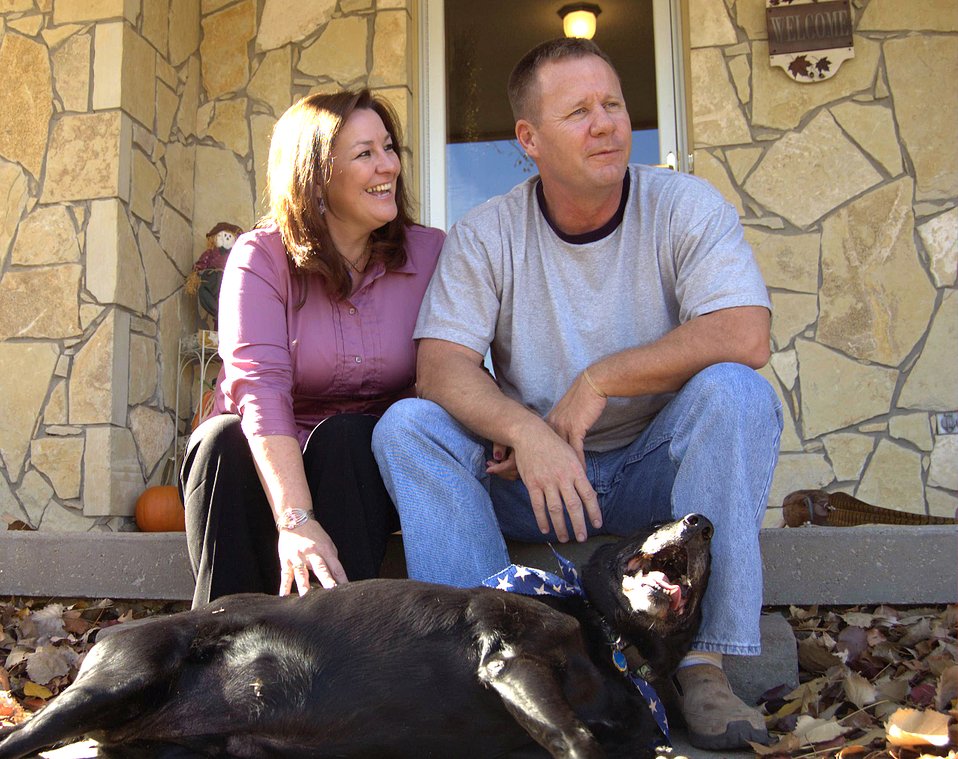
Chief comforts Iraqi child

Chief Master Sgt. John Gebhardt and his wife, Mindy, share a quiet moment with their dog, Cole, at their home in Wichita, Kan. The chief is the superintendent of 22nd Wing Medical Group at McConnell Air Force Base, Kan. He has recently gained worldwide attention for a photo of him comforting an Iraqi child.